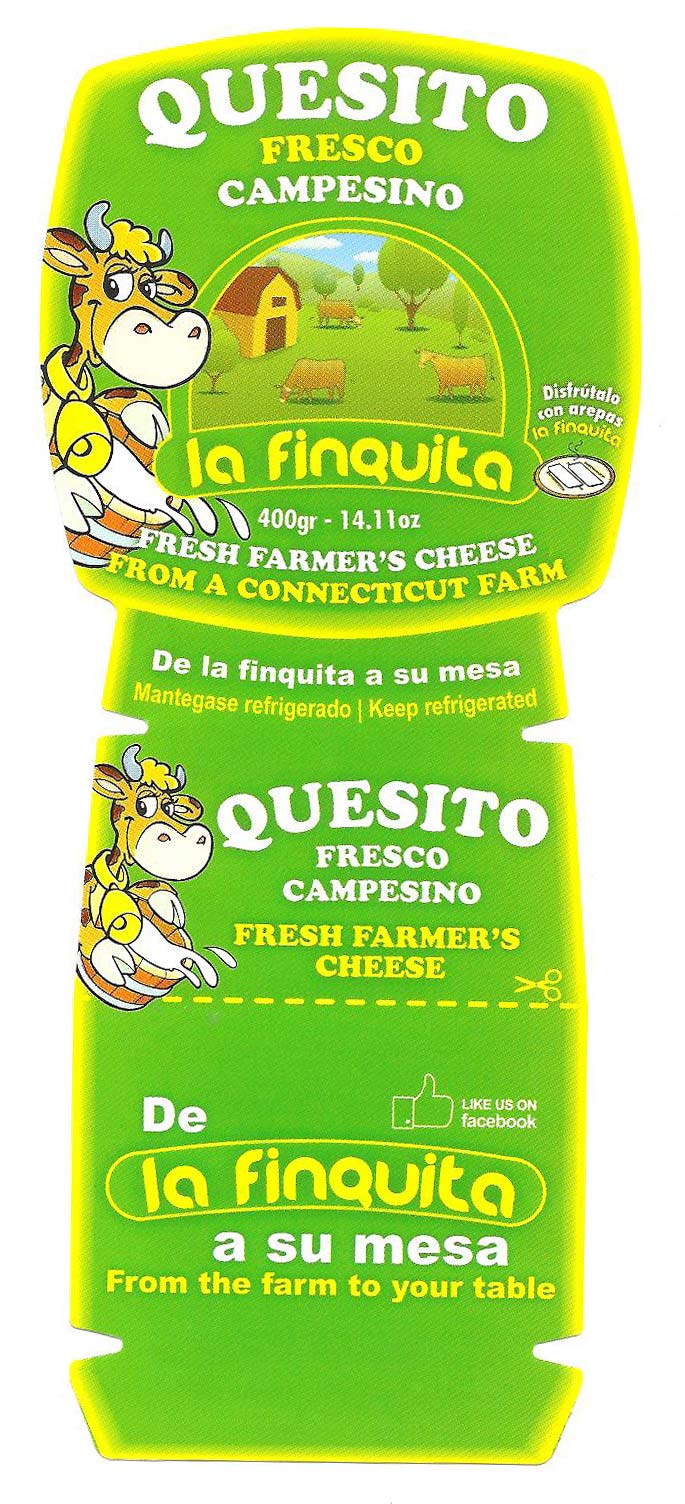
RECALLED – Cheese

June 12, 2014 – a Finquita Cheese Issues An Allergy Alert Due To Potential Peanut And Tree Nut Contamination In Fresh Farmers Cheese.